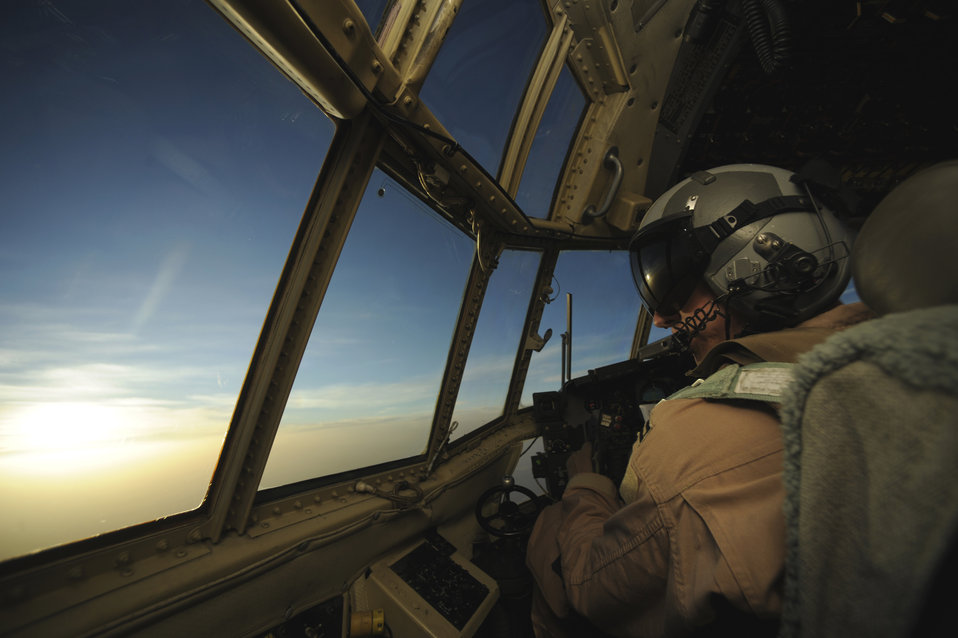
Flying medics provide theater-wide care

Capt. Kenneth Hoekman scans the horizon during aeromedical operations from a C-130 Hercules April 23 over Southwest Asia. Captain Hoekman is a C-130 pilot from the 746th Expeditionary Airlift Squadron.